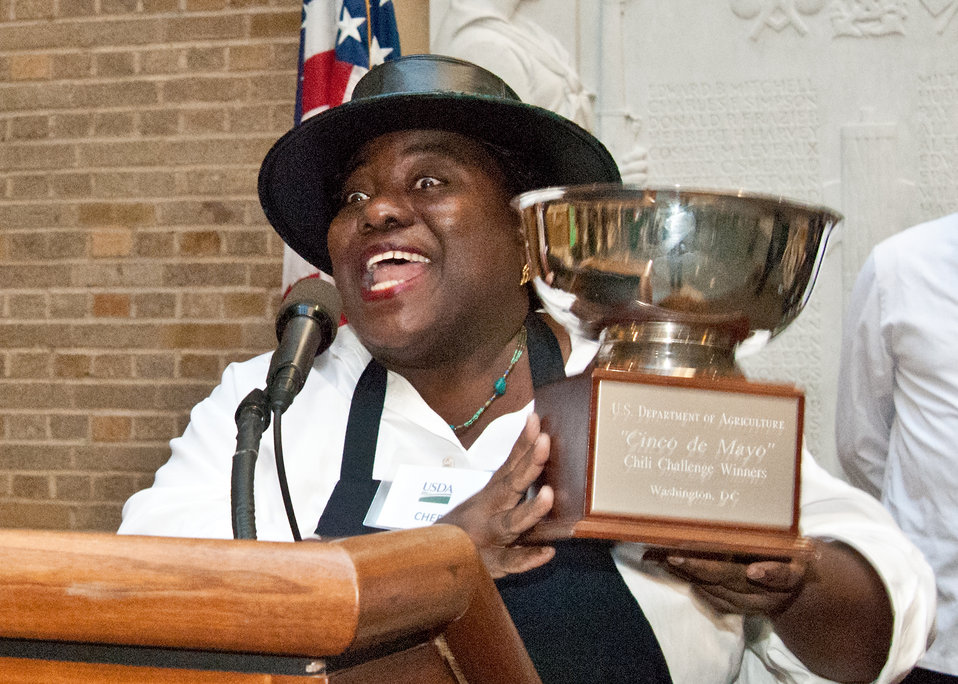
Shirley Brown, Office of the Chief Economist celebrates with the Chili Challenge trophy for her winning “Chuck Wagon Chili” in the Second Annual U. S. Department of Agriculture Chili Challenge Contest during Hispanic Heritage Month at USDA in Washington, DC, Thursday, October 6, 2011. Celebrity chefs and USDA employee chef volunteers used chili’s in delicious recipes to celebrate Hispanic cuisine. . The judges for the challenge will be Chefs Toni Tipton-Martin, Chef Pedro Matamoros from 8407 Kitchen Bar, Corporate Executive Chef Lance Lemin, Ed Avalos, Undersecretary, Marketing and Regulatory Programs and Krista Hardin, Chief of Staff.